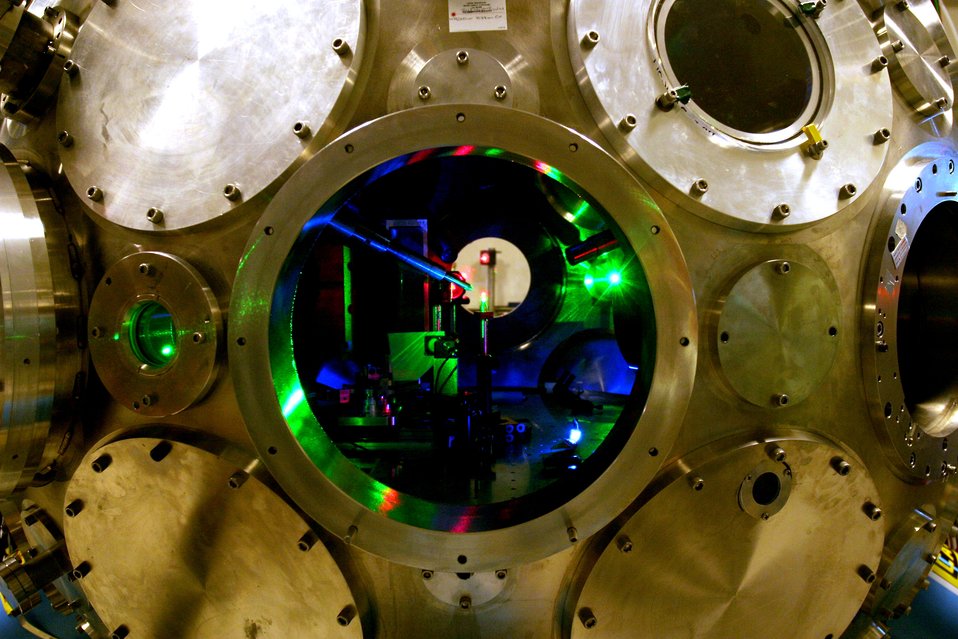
A VIEW INTO AN OPEN PORT OF THE TRIDENT LASER FACILITY NORTH TARGET CHAMBER.

The Trident Laser Facility at Los Alamos National Laboratory is an extremely versatile neodymium-glass laser system dedicated to high-energy-density physics research and fundamental laser-matter interactions. The facility is now operated in support of a national user program, enabling world-class science in high-density physics.